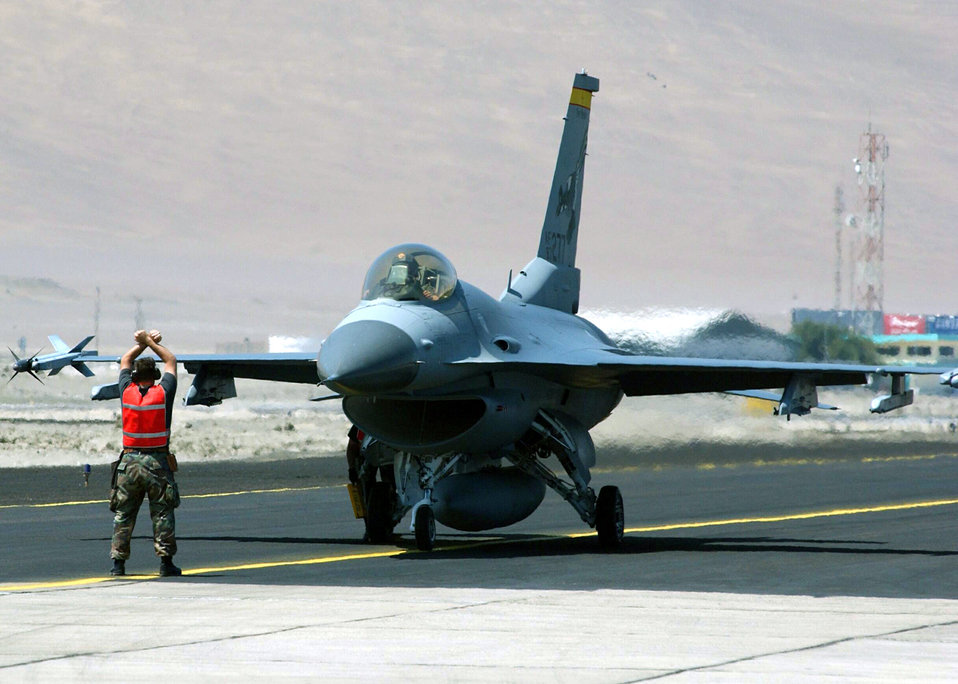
Man against machine

IQUIQUE, Chile -- A New Mexico Air National Guardsman signals an F-16 Fighting Falcon to stop after a Salitre 2004 exercise mission. Salitre 2004 is a multinational air combat training exercise taking place through Oct. 8 here at Los Condores Air Base. Air forces from Chile, Argentina and Brazil are joining more than 100 U.S. Airmen for the exercise. Participants are here to sharpen air-combat skills, exchange air operations and tactics, and promote closer relationships among American nations.